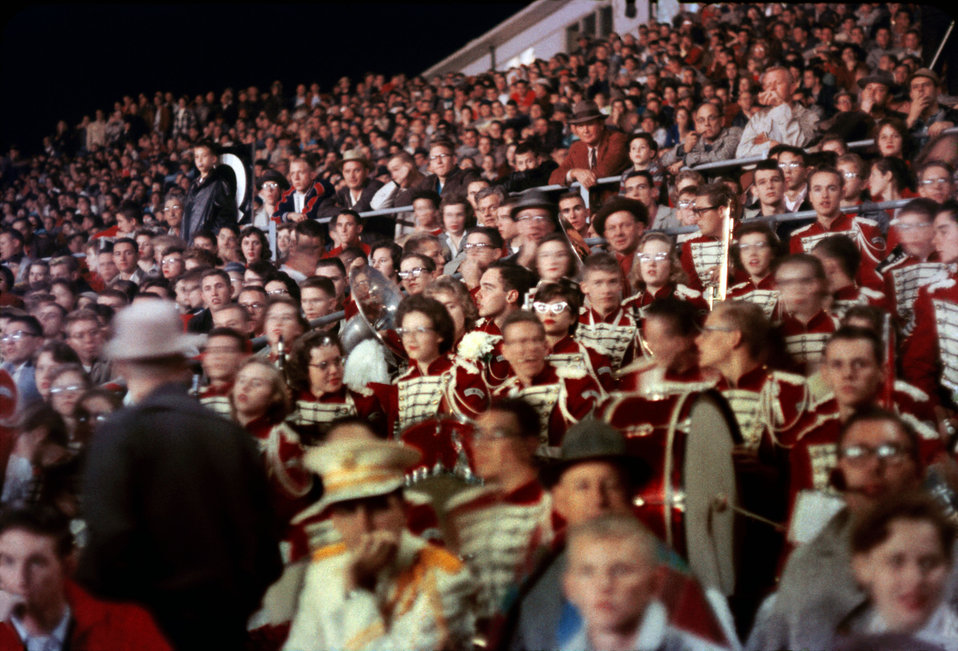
Crowd at Oak Ridge Football Game

DOE photo by Ed Westcott

Crowd with Band at Oak Ridge High School Football Game Nov. 1958